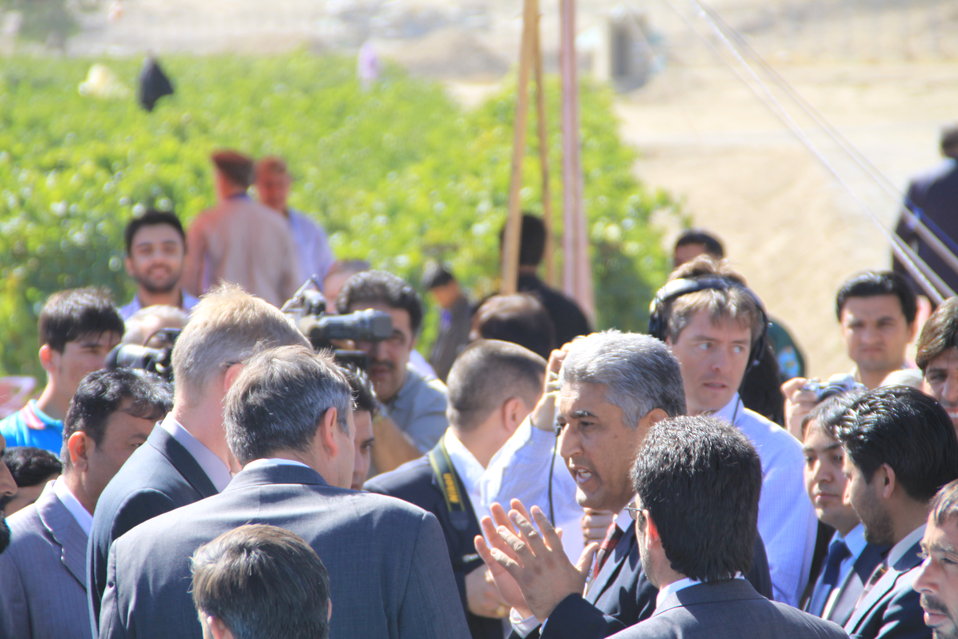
AVIPA Plus Wheat Seed Distribution 101005

US Ambassador Karl Eikenberry and USAID Acting Mission Director Kevin Brownawell joined the Minister of Agriculture, Irrigation and Livestock, H.E. Minister Mohammed Rahimi in signing a Memorandum of Understanding and distributing vouchers to area farmers for wheat and fertilizer.

US Ambassador Karl Eikenberry and USAID Acting Mission Director Kevin Brownawell joined the Minister of Agriculture, Irrigation and Livestock, H.E. Minister Mohammed Rahimi in signing a Memorandum of Understanding and distributing vouchers to area farmers for wheat and fertilizer.

US Ambassador Karl Eikenberry and USAID Acting Mission Director Kevin Brownawell joined the Minister of Agriculture, Irrigation and Livestock, H.E. Minister Mohammed Rahimi in signing a Memorandum of Understanding and distributing vouchers to area farmers for wheat and fertilizer.